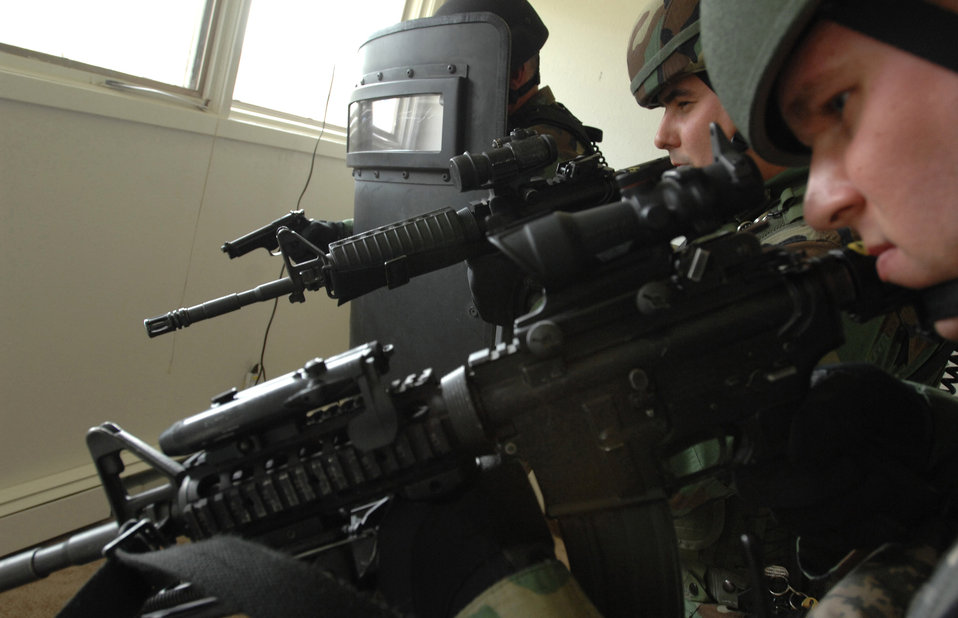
Special Emergency Response

Master Sgt. Shawn Cox (right to left), Tech. Sgt. Dennis Keller and Senior Airman Brad Hickey surround a suspect who has barricaded himself in June 9 during a counter-terrorism exercise at Eielson Air Force Base, Alaska. The Security Forces Special Emergency Response Team members train to stay current on the policies and procedures involving hostage retrieval, barricaded subjects and counter-terrorism. SERT is the Air Force Security Forces equivalent to civilian police forces SWAT team.